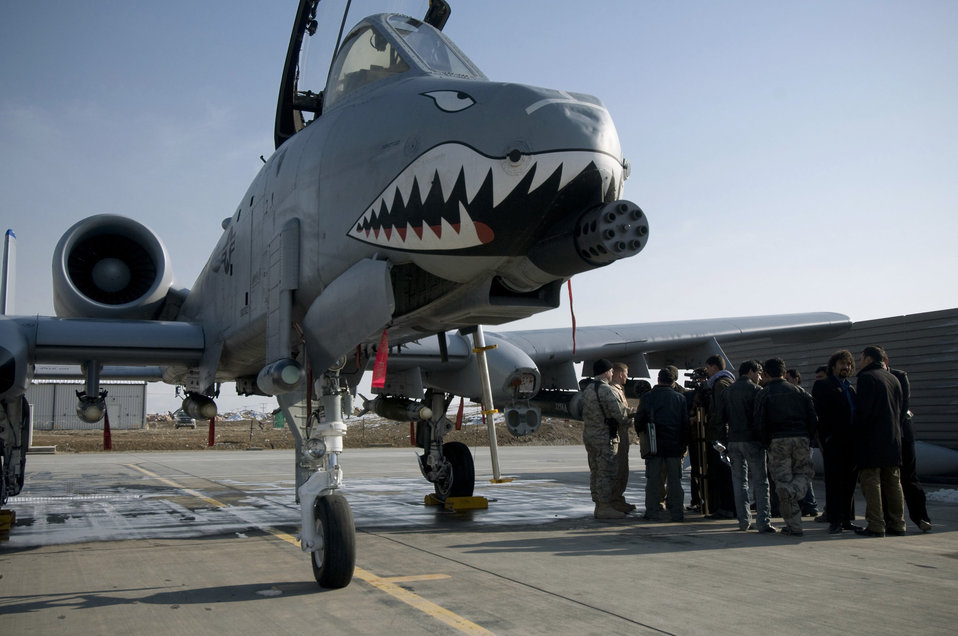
Afghan media learn about close-air support

Members of local news agencies are shown around an A-10 Thunderbolt II during Afghan Media Day Jan. 5 at Bagram Airfield, Afghanistan.